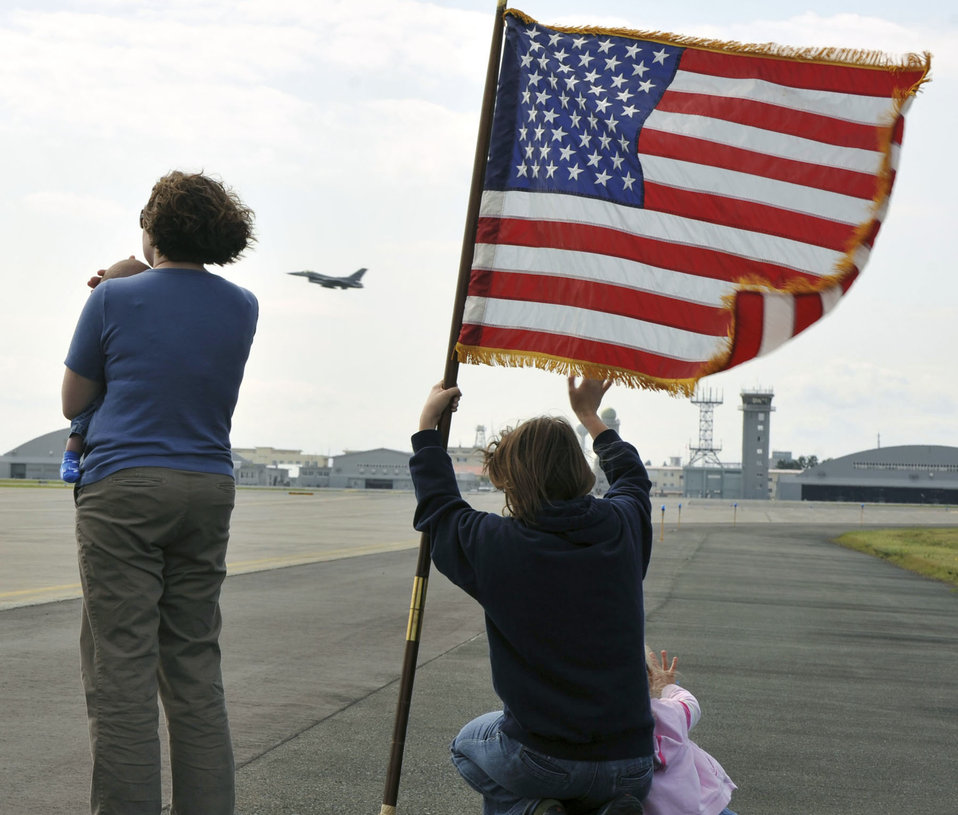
Return home safe

Jenny Cichowski, (left) wife of Capt. Trevor Cichowski, and Laura Breau, wife of Capt. Jesse Breau, wave to members of the 13th Fighter Squadron Sept. 27. 2010, as they leave Misawa Air Base, Japan for a deployment. Traditionally, spouses of the deploying members gather at the flightline to watch the pilots fly away.